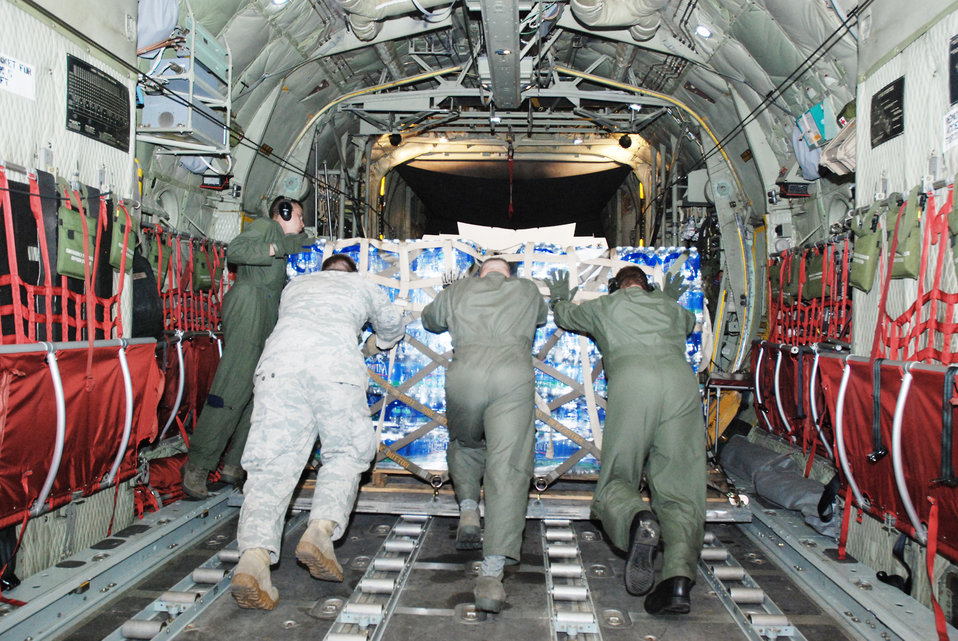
Coronet Oak aircrews respond to Haiti earthquake

Air Force reservists, Guardsmen and active-duty Airmen assist with off-loading a pallet of water delivered to military forces in the Dominican Republic Jan. 22, 2010, assisting with the earthquake relief in Haiti.